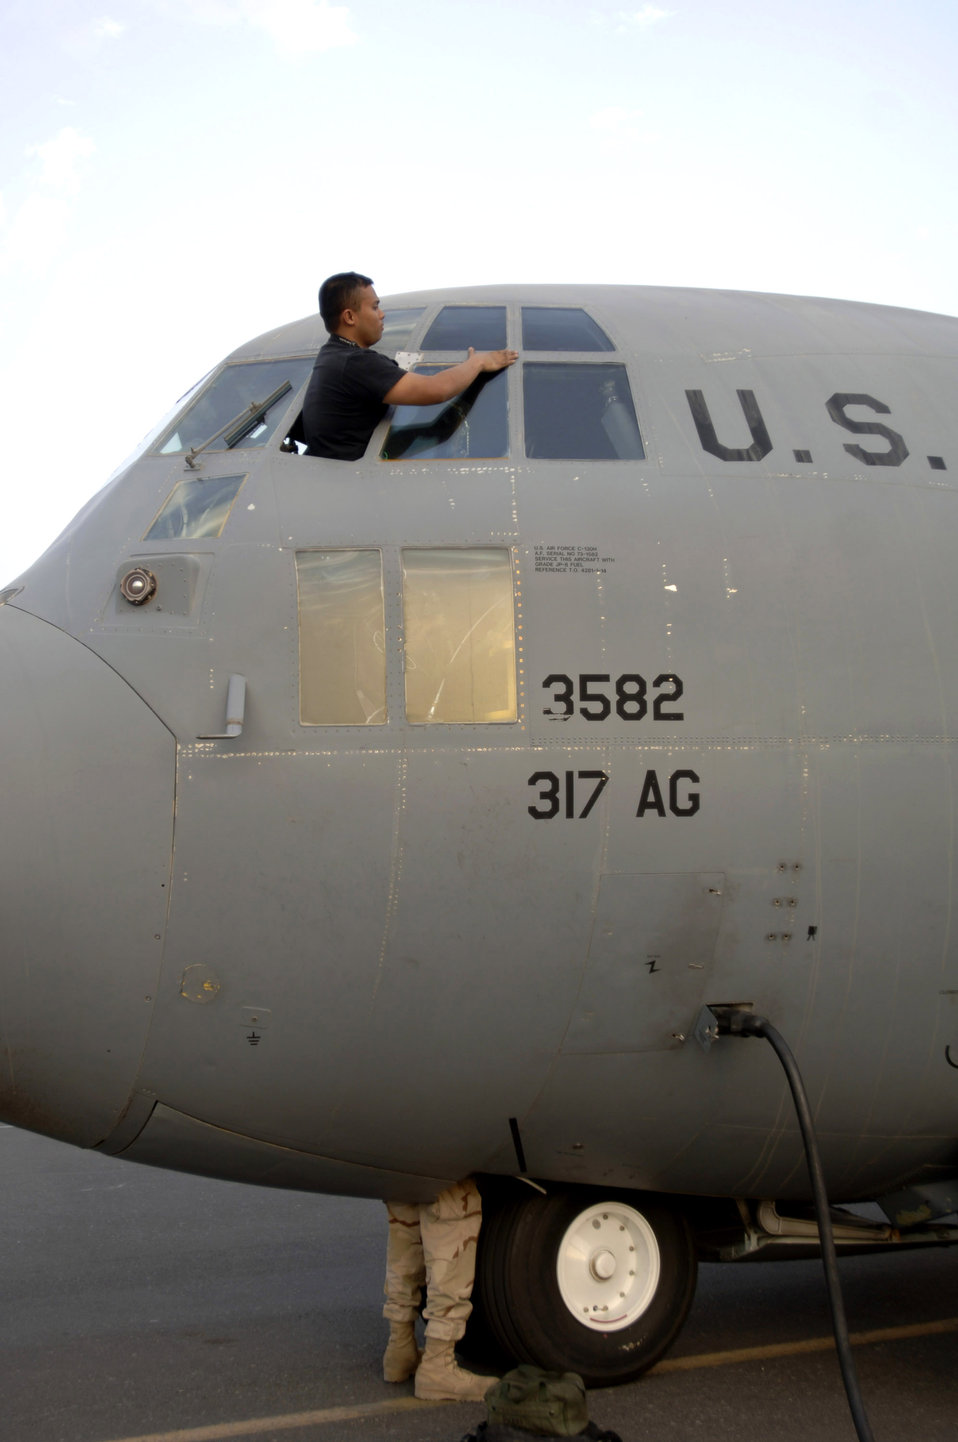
A real workhorse

Airmen perform maintenance on a C-130 Hercules at an air base in Southwest Asia. The C-130 is a very versatile airlifter used to transport people, supplies and equipment wherever they're needed.